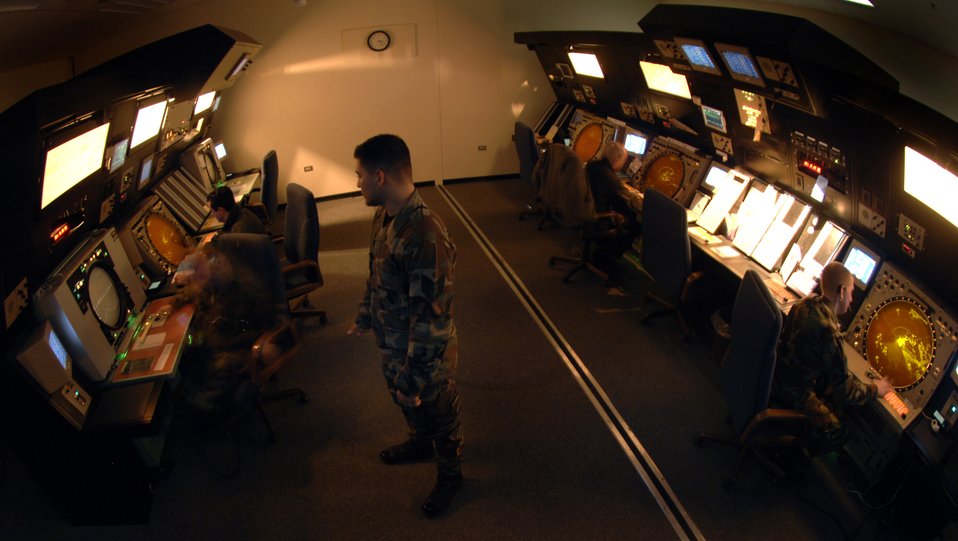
Tower stays on top of things

Tech. Sgt. Bobby Hickman ensures the aircraft controllers provide expeditious airflow for aircraft Nov. 27 flying over Aviano Air Base, Italy. Air traffic controllers perform duties within a radar facility and maintain radar surveillance of approach control airspace, processing and coordinating aircraft through terminal control. Sergeant Hickman is a radar approach control supervisor at Aviano AB.